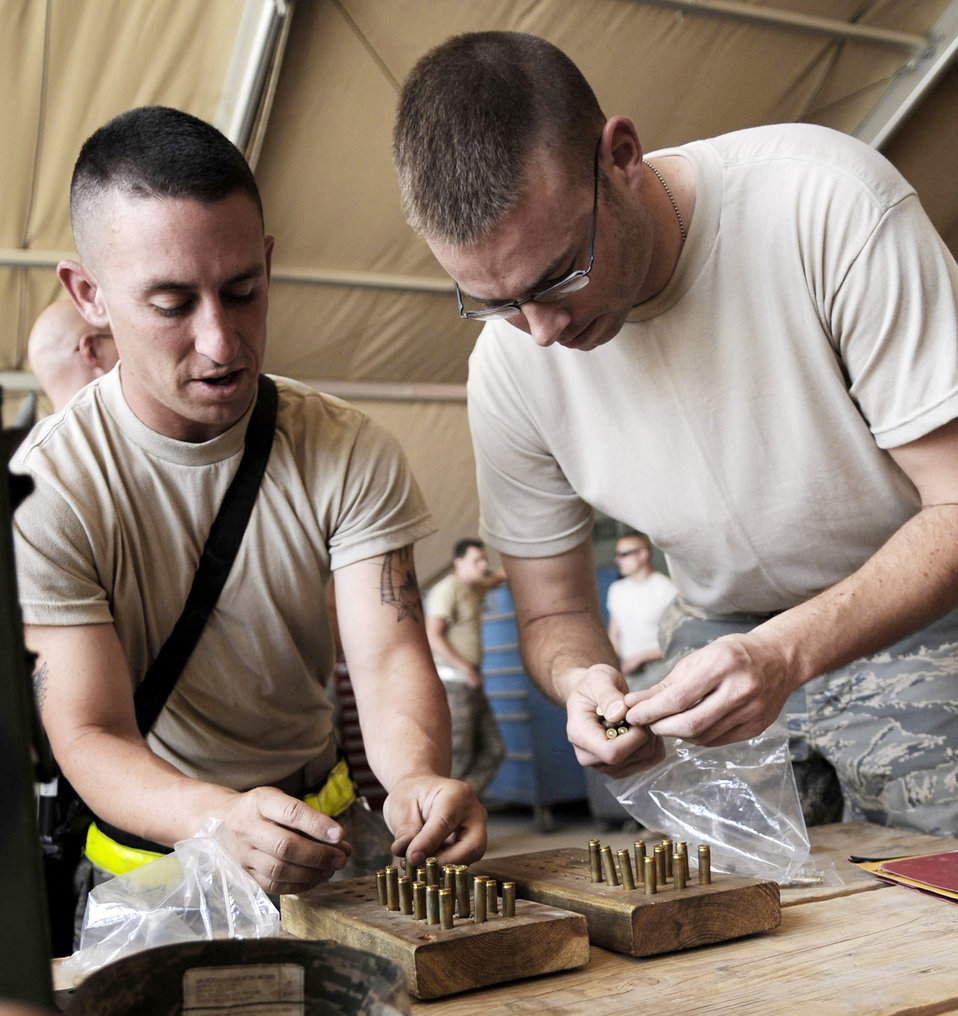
Combat arms teams support all operations

Senior Airmen Drew Evan Green (left) and Kurtis Franklin confirm the accurate amount of ammunition before signing for the issued items April 16, 2010, at Kandahar Airfield, Afghanistan. Airmen Green and Franklin are both C-130 Hercules crew chiefs assigned to the 451st Expeditionary Aircraft Maintenance Squadron.